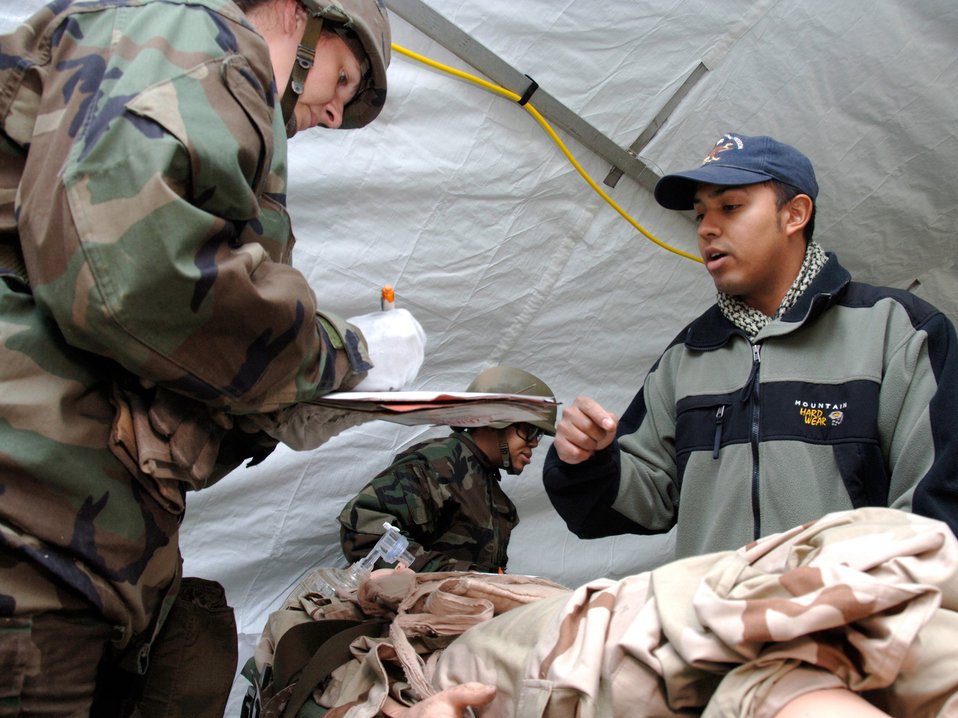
Not forgotten

Medical Readiness Training instructor George Torres (right) discusses transport options with Tech. Sgt. Erin Wooden (left) during an exercise held as part of the medical readiness training course conducted by the 59th Medical Logistics and Readiness Squadron. The course is designed to help medical personnel prepare for deployments. Sergeant Wooden is a 59th Clinical Support Squadron member.